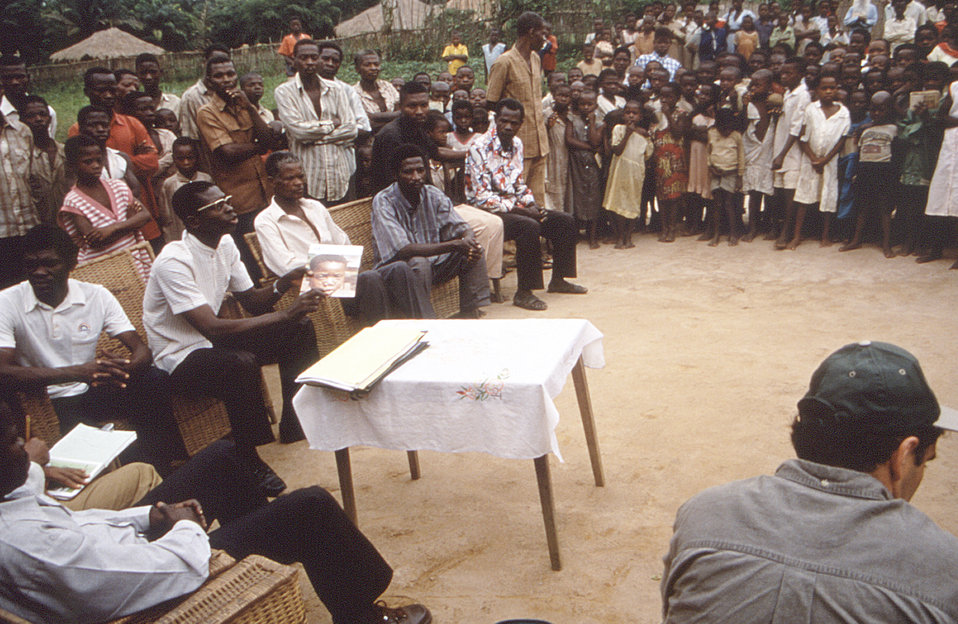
This image was created during an investigation into an outbreak of monkeypox, which took place in the Democratic Republic of the Congo (DRC), 1996 to 1997, formerly Zaire. Pictured here, was the Chief of Ekanga as he was conducting a meeting intended to educate his fellow villagers about monkeypox.